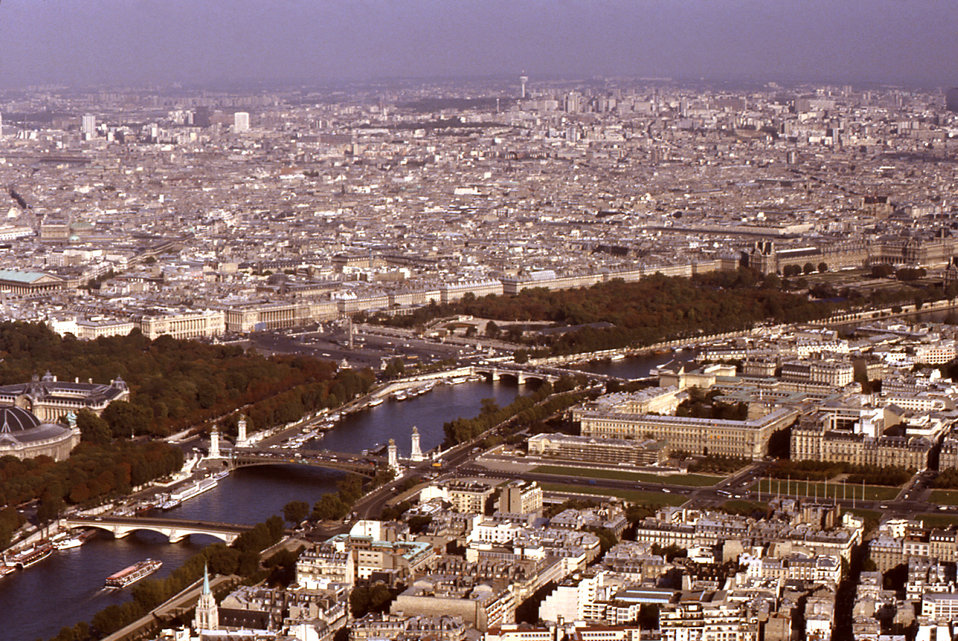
The Seine River flows through Paris, the capital city of France. This view of the Seine was from the Eiffel Tower. From this vantage point, it was possible to see the many bridges spanning the river, as well as the visual effect of the city's building height limit of approximately six stories throughout the city center. The design contributes to the impression of the cityscape as low, convenient, and the streets unencumbered by shadows, hence its reputation as the 'City of Light'.The Seine River is approximately 485 miles long, and with its tributaries, drains an area of about 30,400 square miles. It carries most of France's inland traffic. It is the country's second-longest river after the Loire. Paris is an important tourist destination, and therefore, it is important for all travelers to be aware of the potential health hazards of travel to all destinations, foreign or domestic.